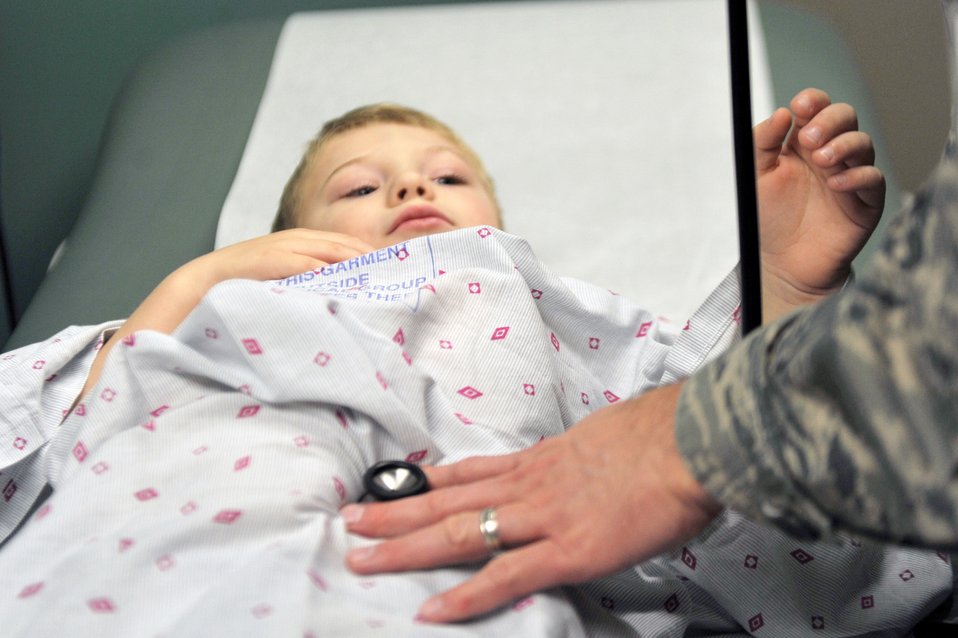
Exceptional Family Member Program

Tyler Lawson gets a physical during a doctors appointment at Fairchild Air Force Base, Wash., on Apr. 6, 2011. Tyler is diagnosed with Autism. Tyler and his family are assisted through the Exceptional Family Member Program which connects active duty family members who have special needs with many helping agencies both on- and off- base.